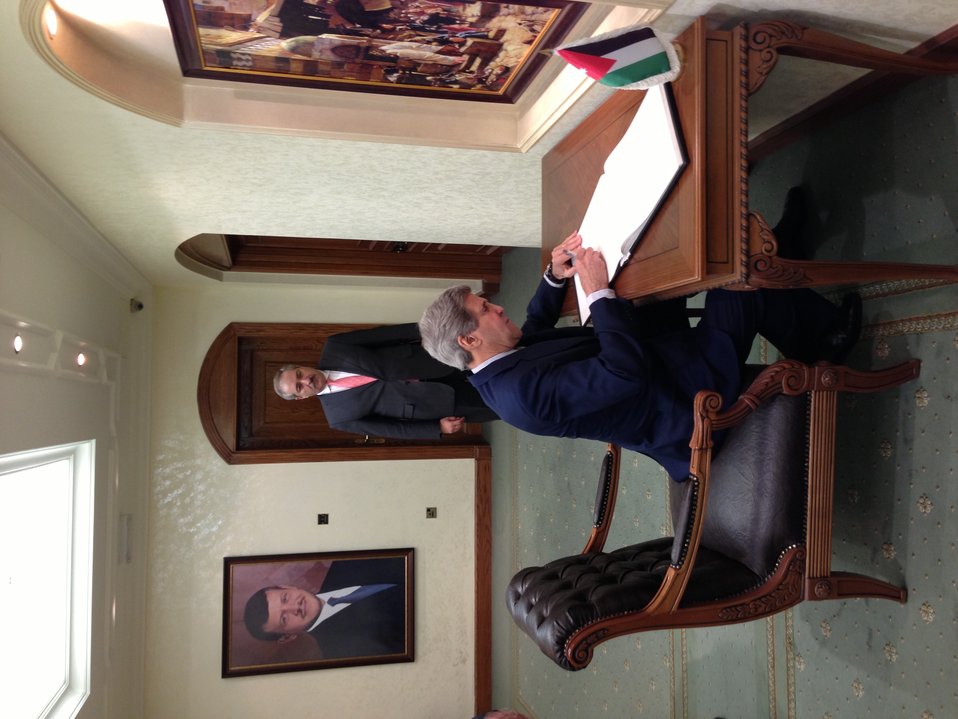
Secretary Kerry Signs Foreign Ministry Guest Book in Amman, Jordan

Jordanian Foreign Minister Nasser Judeh looks on as Secretary of State John Kerry signs the guest book at the Ministry of Foreign Affairs in Amman, Jordan on March 23, 2013.